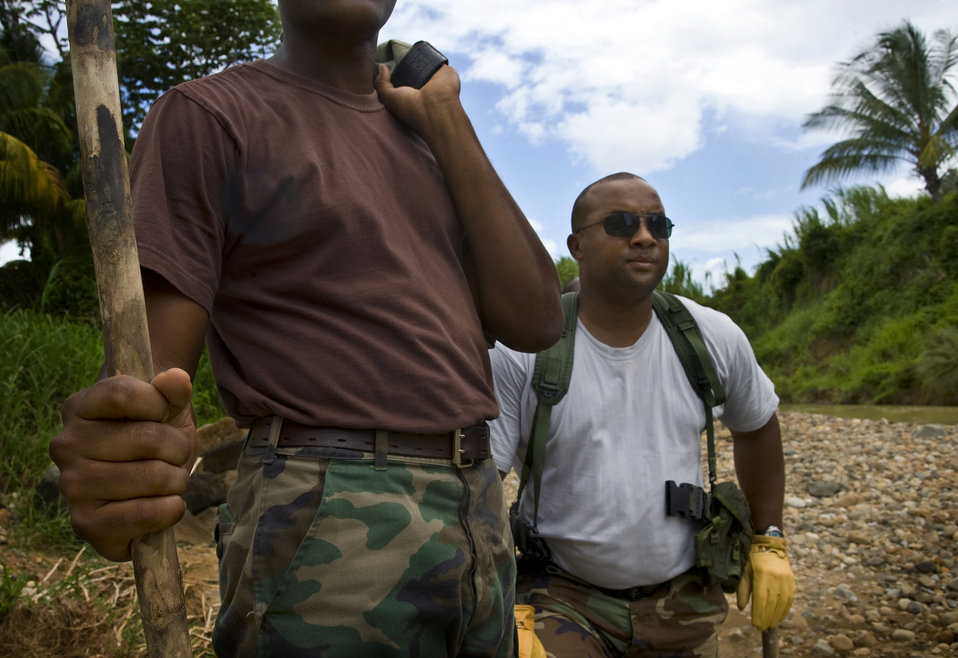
Operation Southern Partner

Constables Jameson Jeremy and Alphonse Cyril, members of the Royal St. Lucia Police Force's Special Service Unit, listen to instructions before practicing swift-water rescue procedures that were being taught by U.S. Air Force pararescuemen June 5 during Operation Southern Partner at La Toc, St. Lucia. Operation Southern Partner is a long term commitment between U.S. and partner nations to share experiences, information, vital skills, tactics and techniques in preparation for future regional challenges that require cooperative solutions.